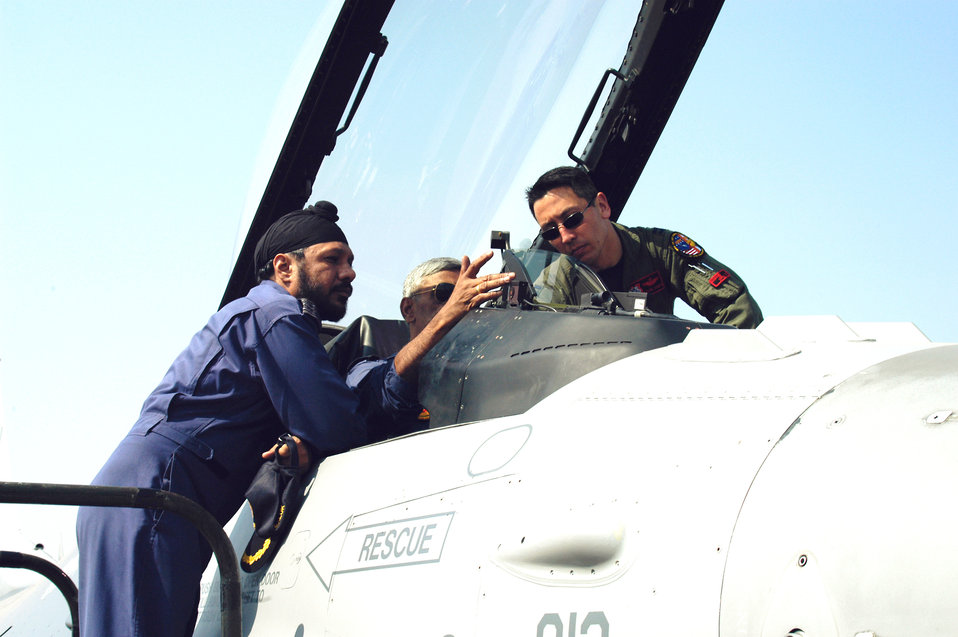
Cope India

KALAIKUNDA AIR STATION, India (AFPN) -- Capt. Kevin Jones gives a cockpit tour to Indian Air Force airmen during Cope India 2006. Currently, the U.S aircraft have flown 113 sorties with the Indian air force. Captain Jones is an F-16 Fighting Falcon pilot from the 13th Fighter Squadron, Misawa Air Base, Japan.